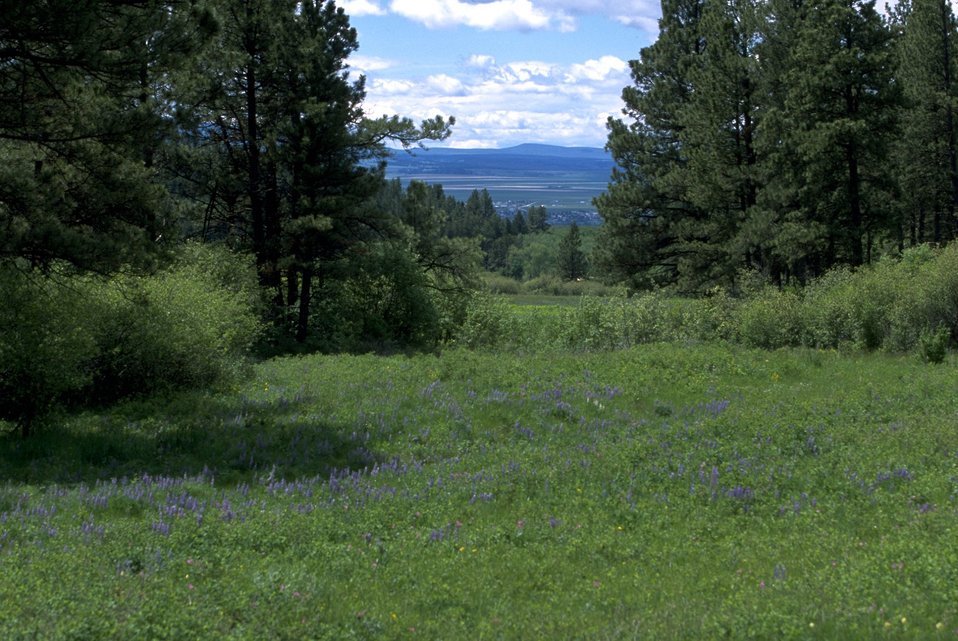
Meadow in the Judith Mountains